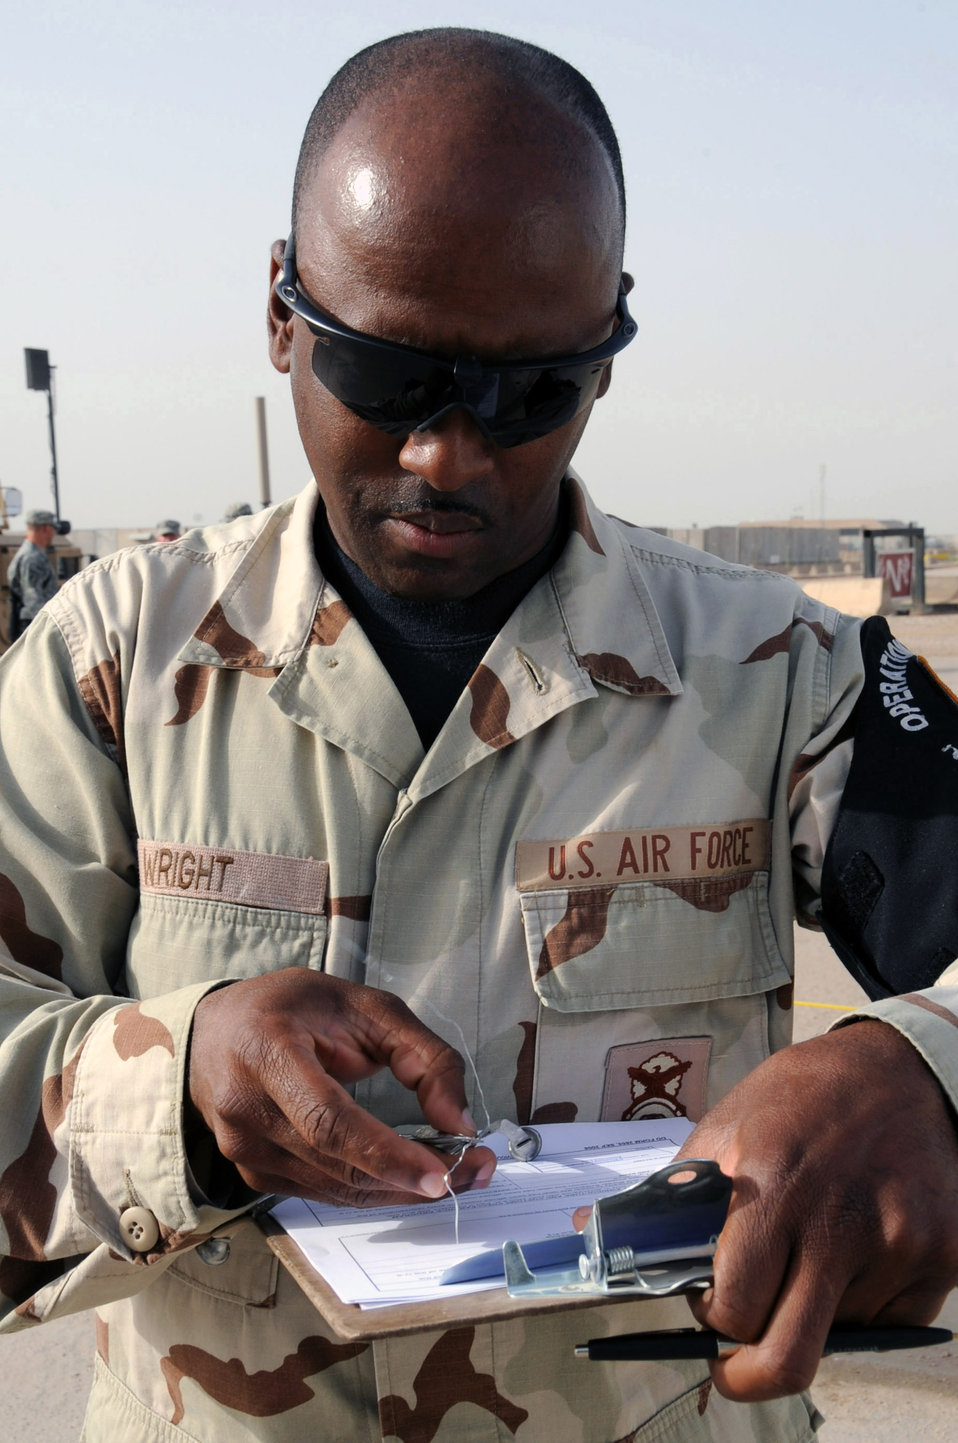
Ali Airmen keep creepy crawlies contained

Tech. Sgt. Paul Wright reviews the customs inspection form at Ali Base, Iraq, for the U.S. Army 600th Transportation Company before the company heads home. The Airmen search for contraband items, such as war trophies, and living creatures trying to hitch a free ride back to the United States. Sergeant Wright is a 407th Provost Marshal's office military police Airman, and is deployed from Spangdahlem AB, Germany.